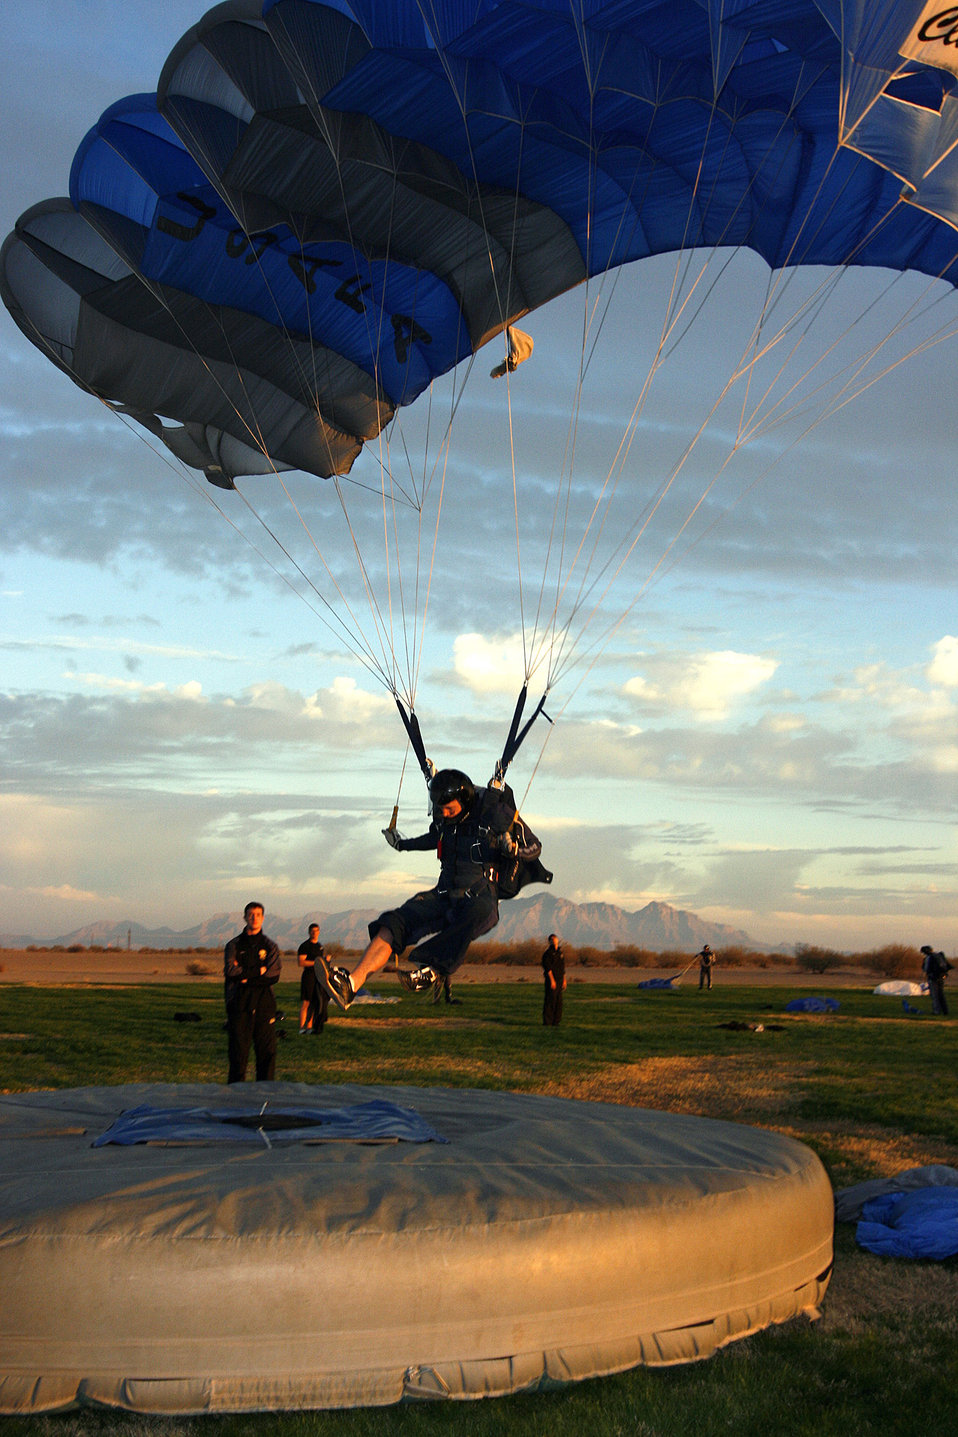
Nailed it!

Air Force Academy Cadet 1st Class Josh LeMair lands a classic accuracy jump at the U.S. Parachute Association's National Collegiate Parachuting Championships Jan. 1, 2011, in Eloy, Ariz. Cadet LeMair and other Air Force Wings of Blue team members competed in events that garnered 47 medals during the three days of competition.